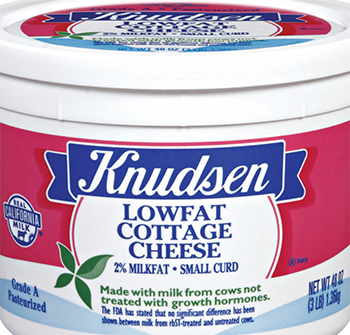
RECALLED – Cottage Cheese products

May 17, 2014 – Product Recall – Kraft Foods Group Voluntarily Recalls Select Cottage Cheese Products Due to Out-of-Standard Storage Temperatures
Certain Knudsen Cottage Cheese, Breakstone’s Cottage Cheese, Simply Kraft Cottage Cheese and Daily Chef Cottage Cheese Products Included in the Recall
.